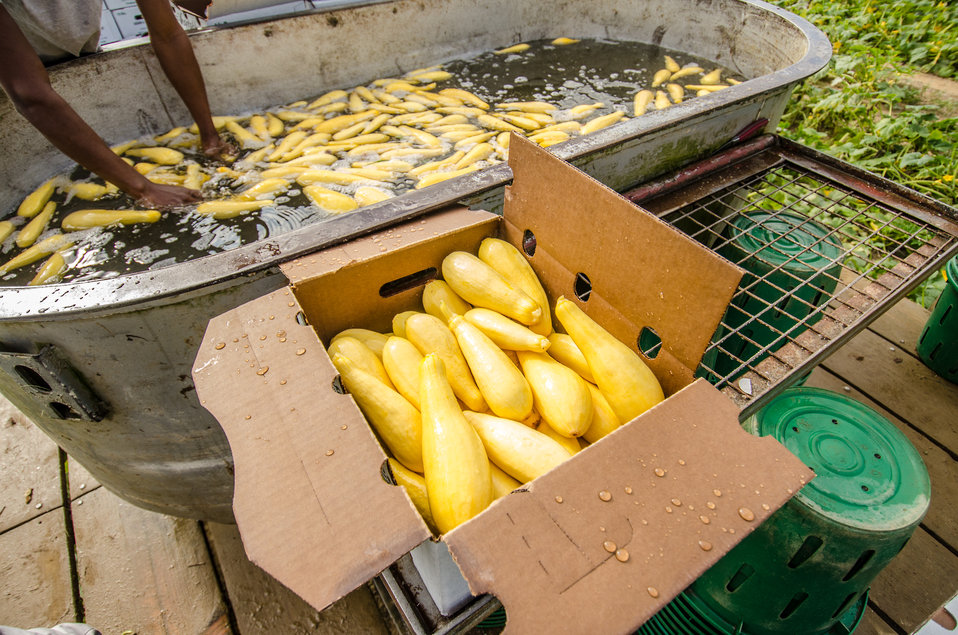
Migrant workers rinse and pack just-picked yellow squash on a processing trailer at Kirby Farms in Mechanicsville, VA on Sep. 20, 2013. Kirby Farms is a third-generation family farm that covers 500 acres, and generates produce and grains on a year-around operation.